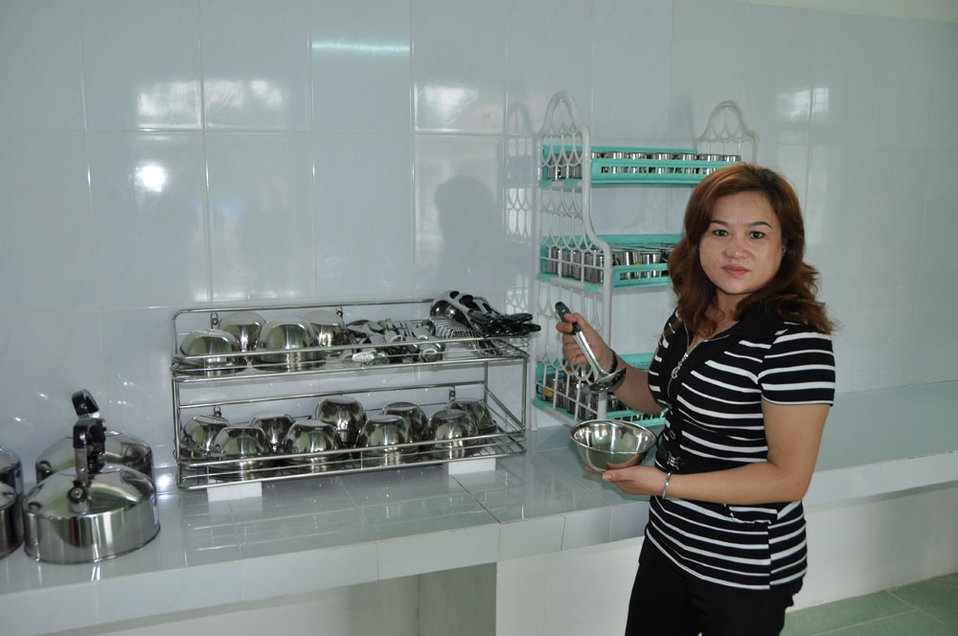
A kindergarten receives a new kitchen, funded by USAID.